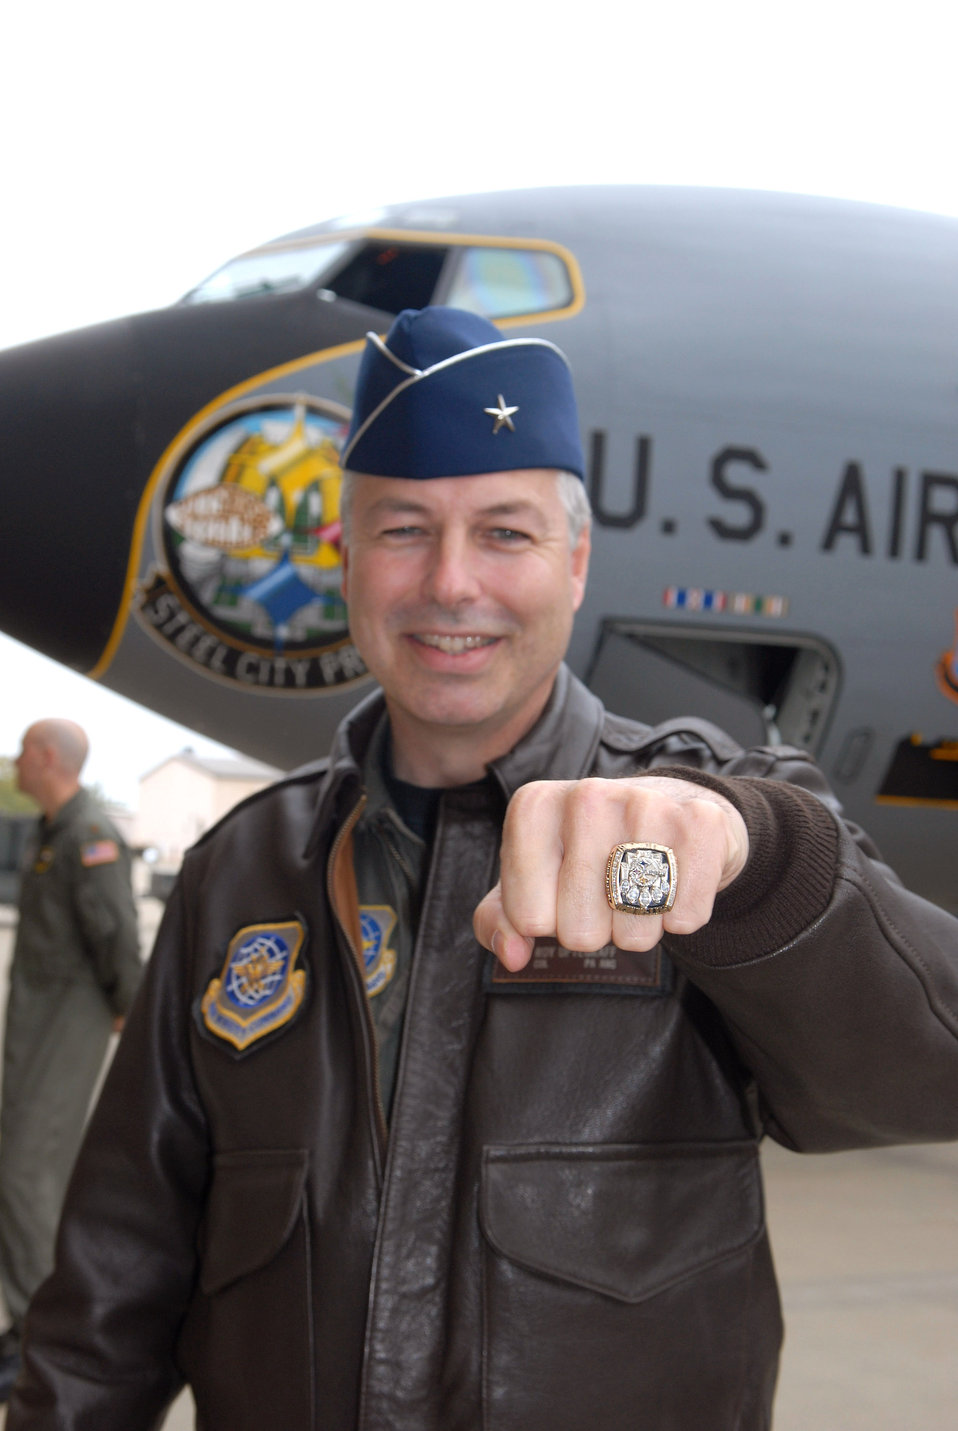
Air Guard unit shows off its 'Steel City Pride'

Brig. Gen. Roy Uptegraff tries on a Pittsburg Steeler Super Bowl ring Oct. 18. Members of the football organization along with residents from the nearby Allegheny Valley School were on hand to help the Airmen of the Pennsylvania Air National Guard's 171st Air Refueling Wing christen the new